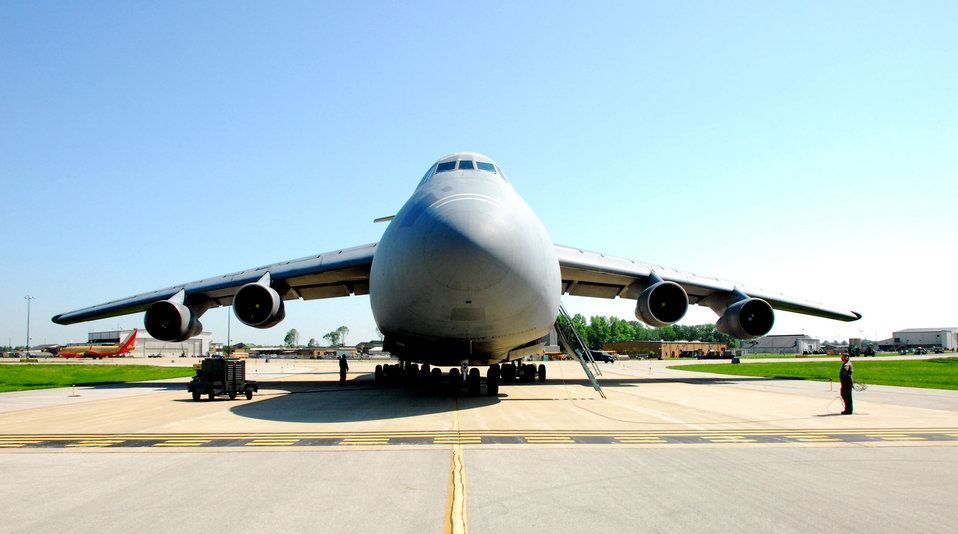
C-5 equals max capacity

A C-5 Galaxy from Wright-Patterson Air Force Reserve Command, Ohio, is part of Exercise Ardent Sentry at Hulman Field May 12 in Terre Haute, Ind. Ardent Sentry is designed to hone coordination between the Department of Defense as well as federal, state, local and private agencies in a series of challenging scenarios ranging from natural disasters to terrorist incidents.